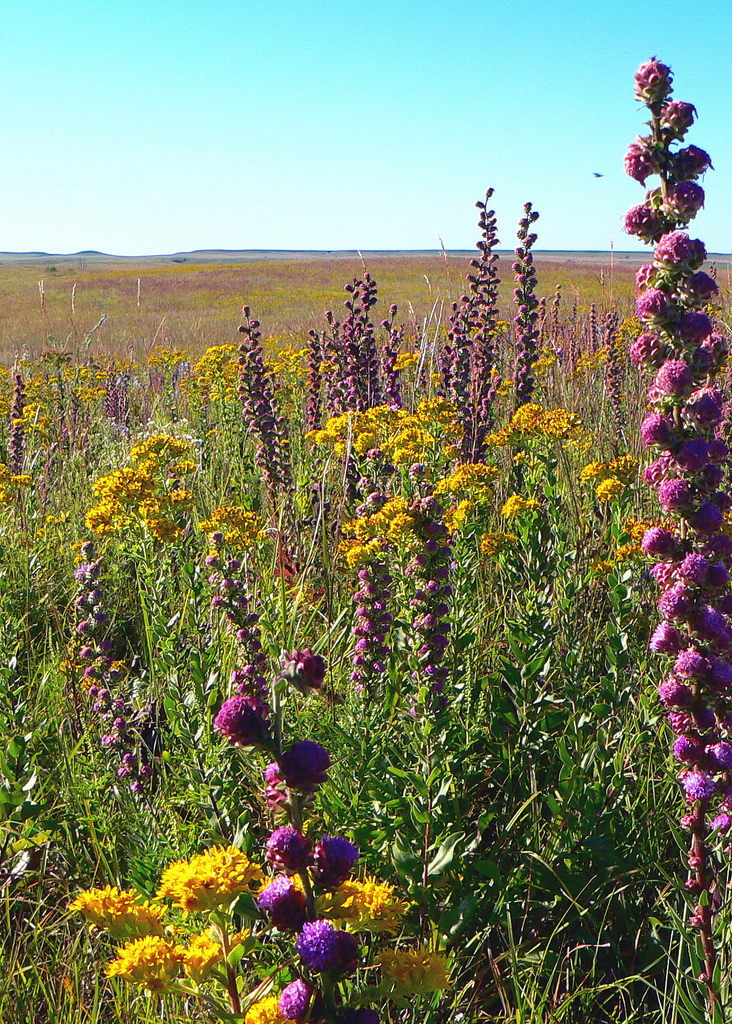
tallgrass prairie flowers

Flint Hills National Wildlife Refuge, KS